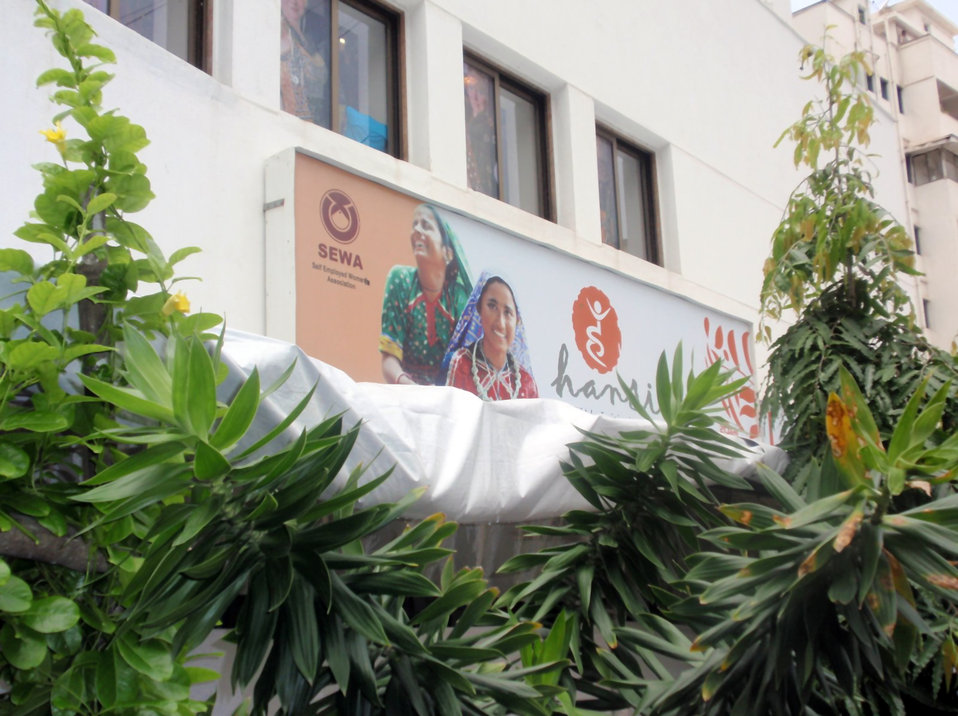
Behind the Scenes: SEWA Hansiba Store

Entrance to SEWA (Self Employed Women's Association) Hansiba Storein Mumbai, India July 18, 2009. U.S. Secretary of State Hillary Rodham Clinton toured the store filled with products made by women entrepreneurs given microcredit loans.